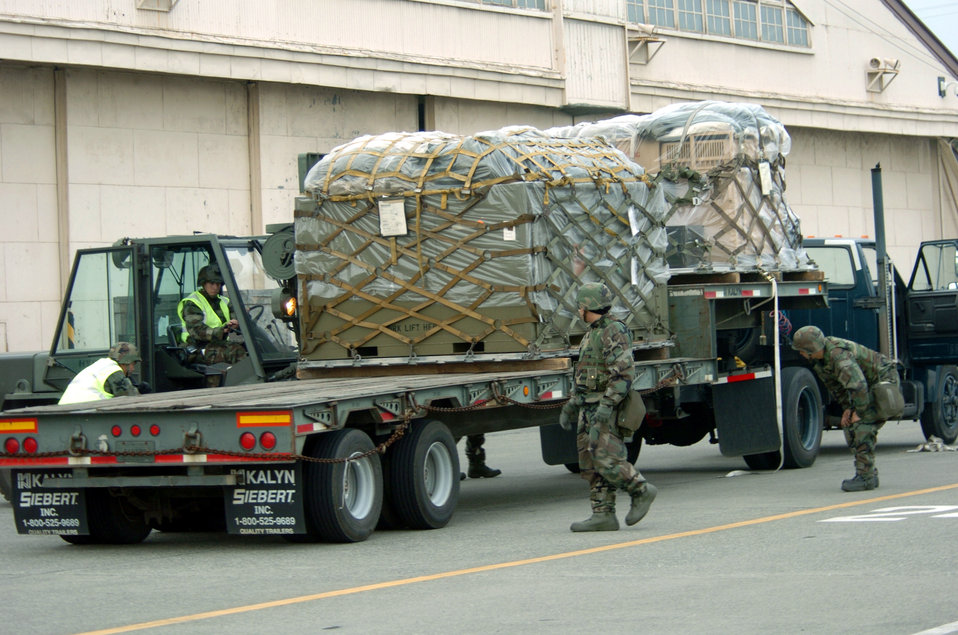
ORE you ready?

YOKOTA AIR BASE, Japan -- Airmen from the 374th Airlift Wing move cargo on the flightline during an operational readiness exercise here Nov. 8. The exercise tested the 374th Airlift Wing's command and control, operations and mission support functions.